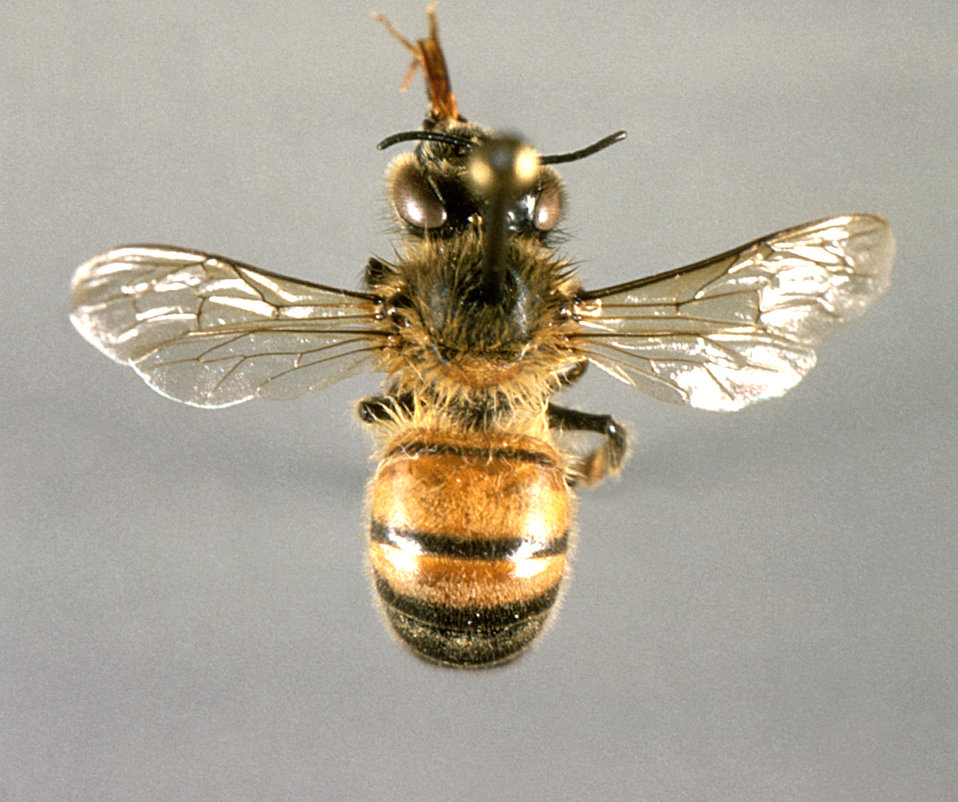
This image depicts a dorsal view of a 'worker' honeybee, Apis mellifera, an arthropod with three pairs of jointed legs.